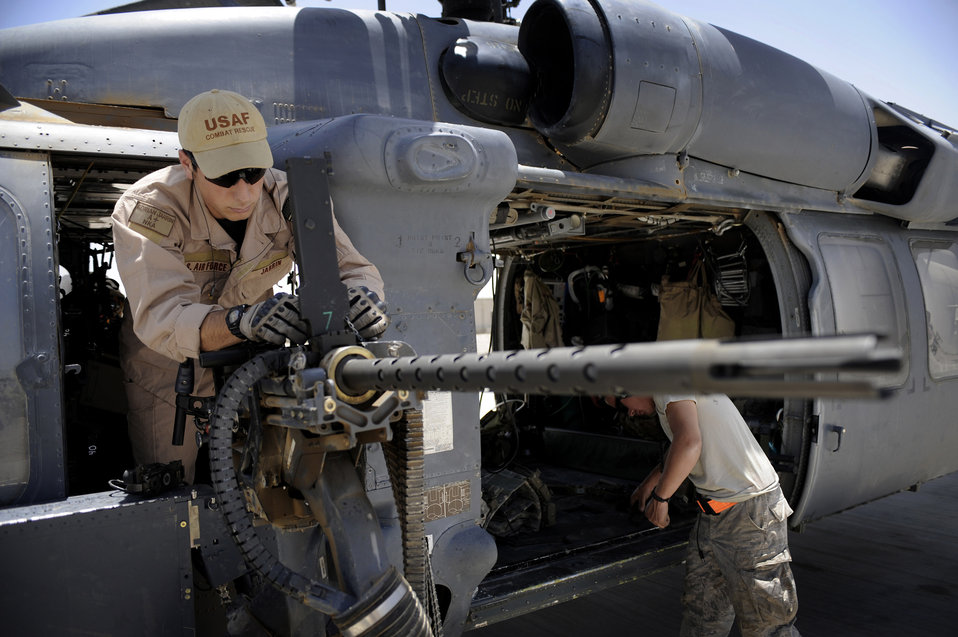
Aerial gunners provide cover for lifesaving mission

Senior Airman Adrian Jarrin conducts a preflight inspection of a .50 caliber machine gun June 25 at Camp Bastion, Afghanistan. Airman Jarrin is an aerial gunner with the 129th Expeditionary Rescue Squadron.